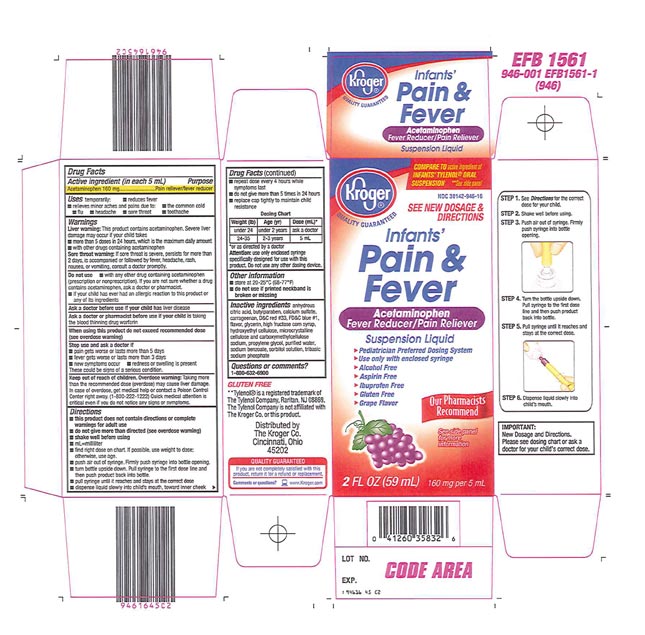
Recalled - Acetaminophen infant suspension liquid

November 1, 2013 – Product Recall – Perrigo Initiates Nationwide Voluntary Product Recall of Acetaminophen Infant Suspension Liquid, 160 Mg/5 Ml, Due to a Potential Defect with the Co-packaged Oral Syringe.